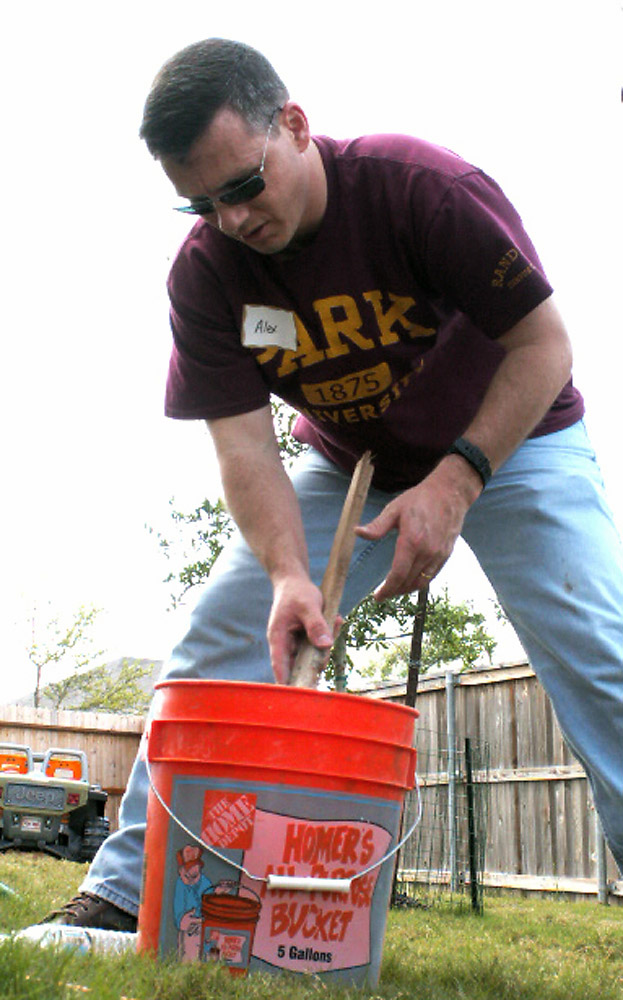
AFPC Airmen help wounded warrior improve quality of life

Master Sgt. Alex McCullough mixes cement to stabilize a fence post as part of a volunteer effort supporting Operation Homefront April 30 in Cibolo, Texas. Volunteers from the Top 3 Association from Air Force Personnel Center from Randolph Air Force Base, Texas, helped craft a gate to provide better access between the front and back yards for Tech. Sgt. Israel Del Toro, an Airman recovering from wounds sustained during a roadside bombing in Afghanistan. Sergeant McCullough is a personnelist at AFPC.